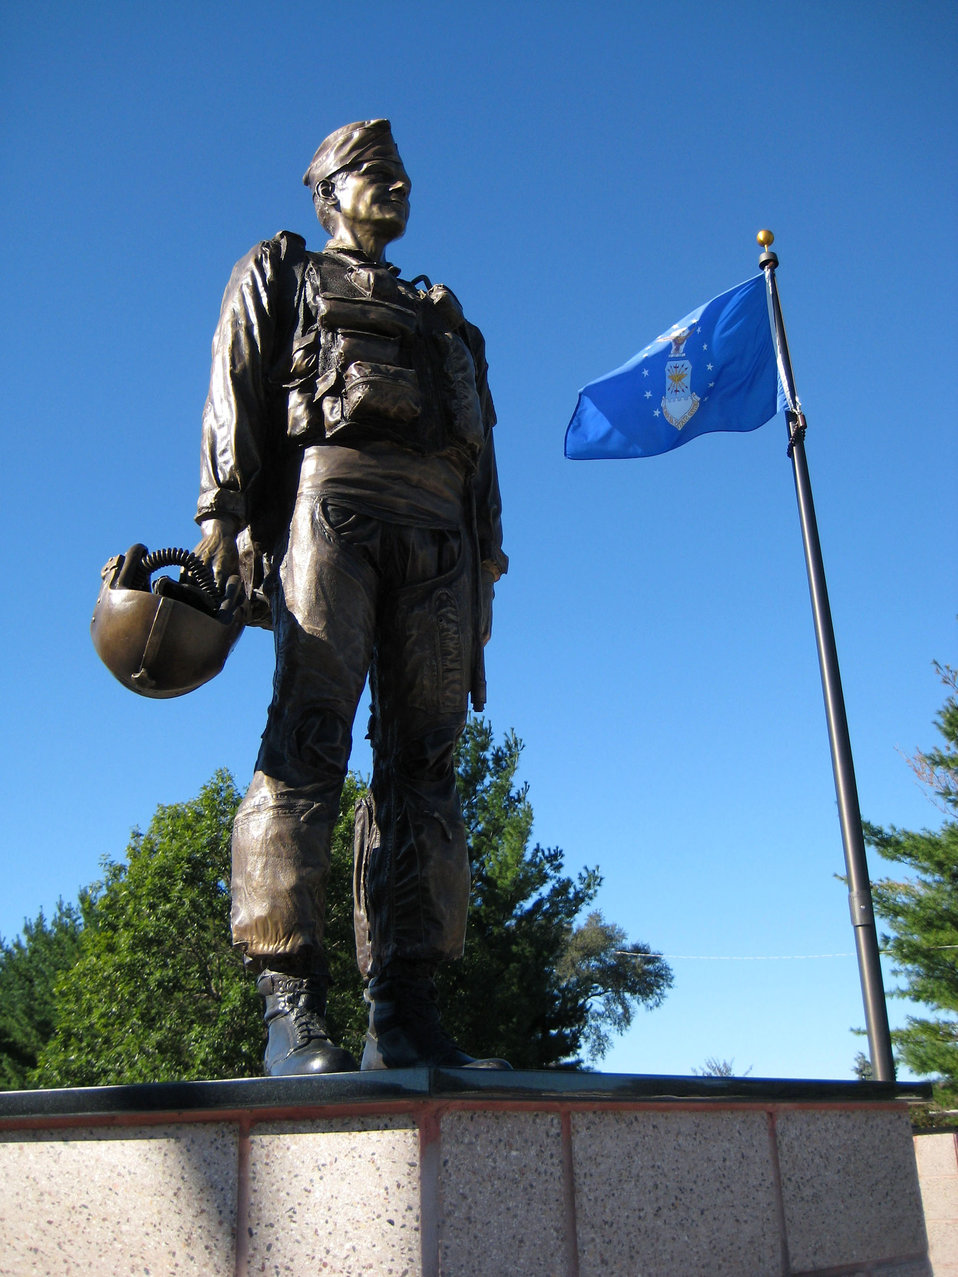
Illinois town dedicates park to local war hero

A bronze statue of retired Col. James H. Kasler was unveiled during a Sept. 15 veteran's memorial dedication in Momence, Ill. Colonel Kasler, a decorated war hero and prisoner during the Vietnam War, is the only Airman to be awarded three Air Force Crosses.